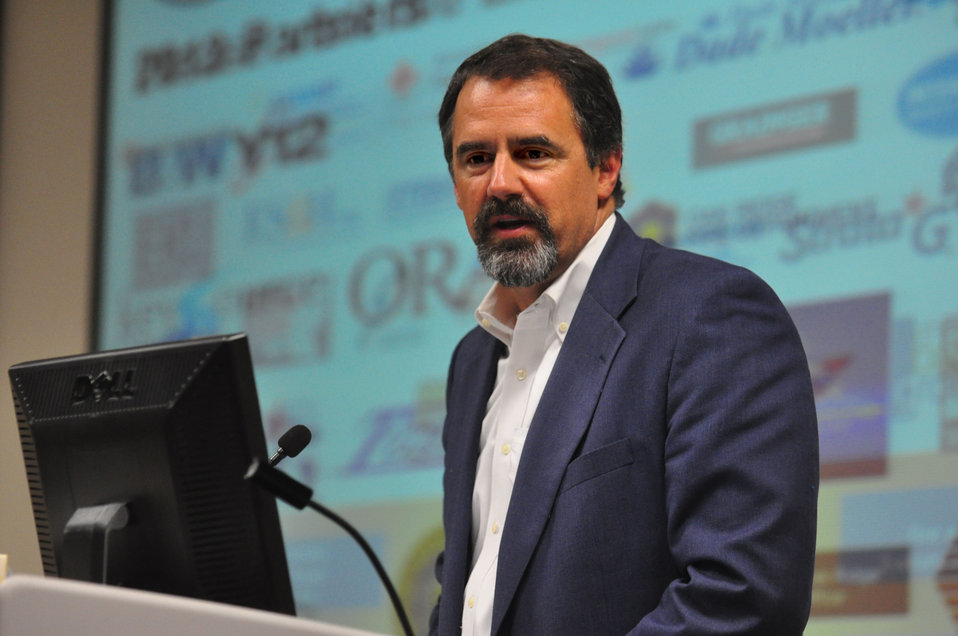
Steve Erhart Manager of the NNSA Production Office Y-12 and Pantex

13-110b DOE photo Lynn Freeny Oak Ridge Safety Fest 9-9-2013 Oak Ridge Tennessee